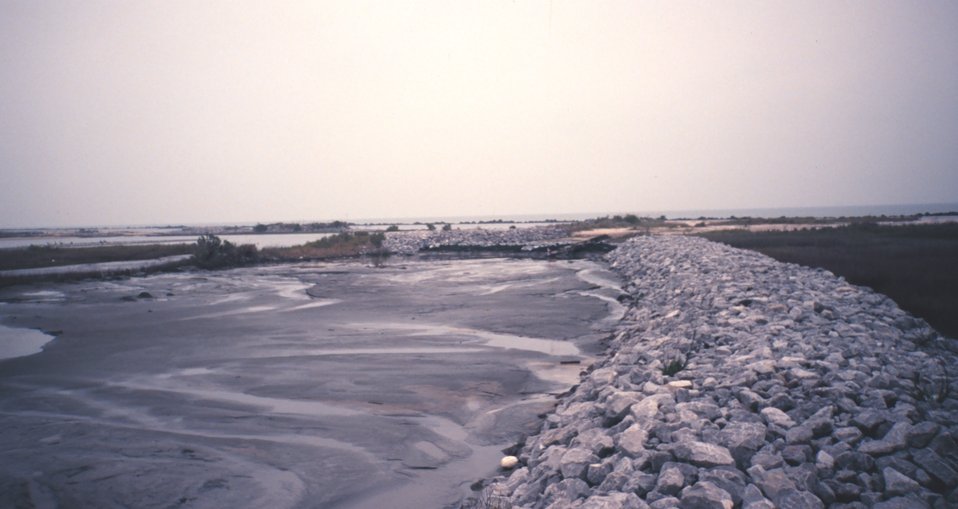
The Greenhill/East Timbalier dredged material -- new land created to left of rock levee.